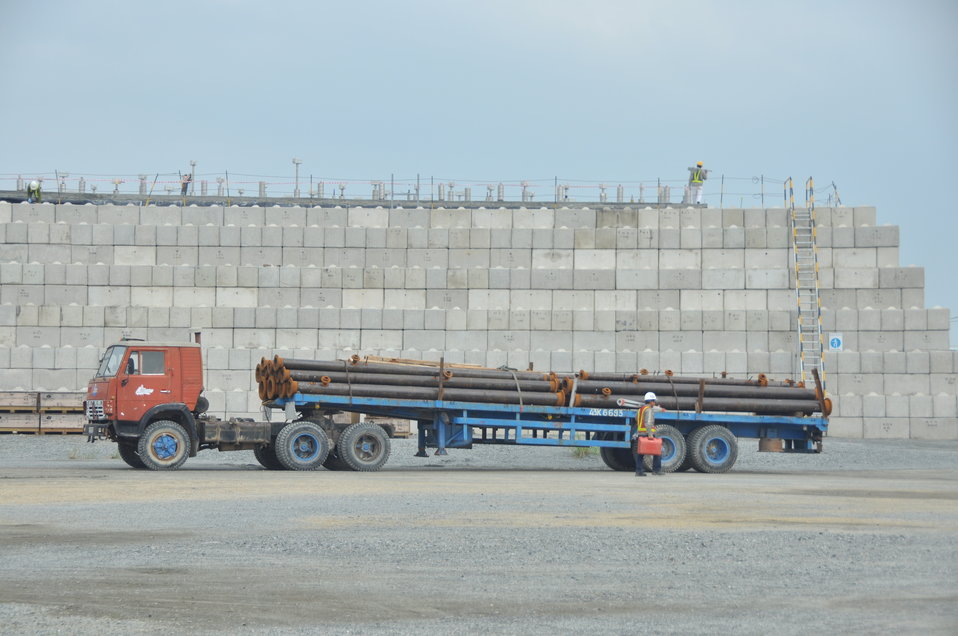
USAID Dioxin Contamination Project Progress: Containment Structure

Progress at the Environmental Remediation of Dioxin Contamination Project at the Danang Airport

December 4, 2013